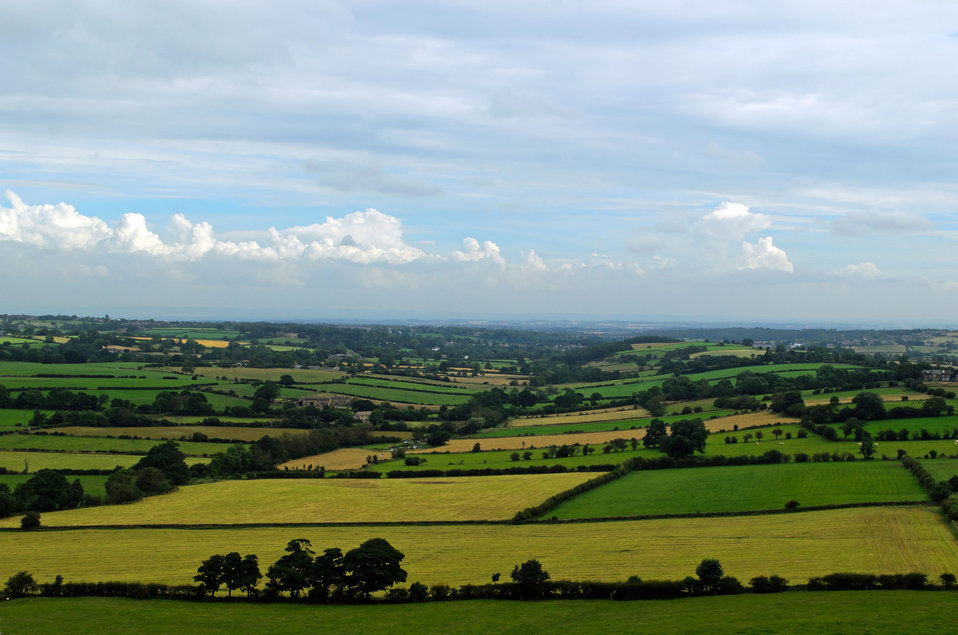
North yorkshire.